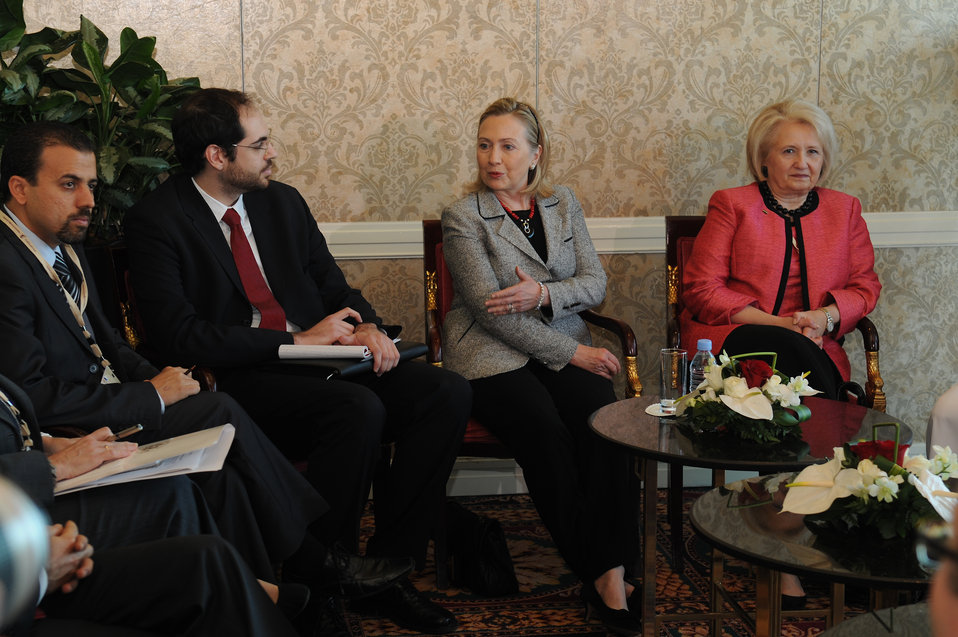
Secretary Clinton and Ambassador Verveer Speak With Qatari Civil Society Members

U.S. Secretary of State Hillary Rodham Clinton and Ambassador-at-Large for Global Women’s Issues Melanne Verveer speak with Qatari civil society members in Doha, Qatar, on January 13, 2010.